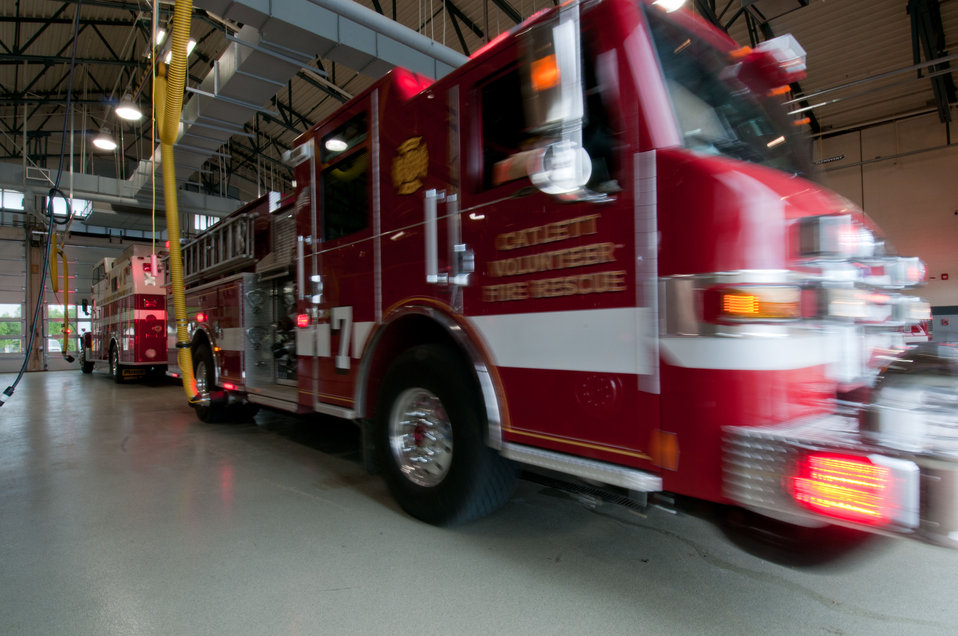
Lt. Mike Eskridge in the driver/pump operator position, Technician Kate Chrismer in the officer seat (in front) and Technician Jonathan Bankston (rear compartment) depart from Catlett Volunteer Fire - Rescue, Station 7, Catlett, VA, on Wednesday, May 4, 2011 in a (Class 7) Fire/Attack Pumper. The yellow exhaust tube automatically detaches from departing vehicles.